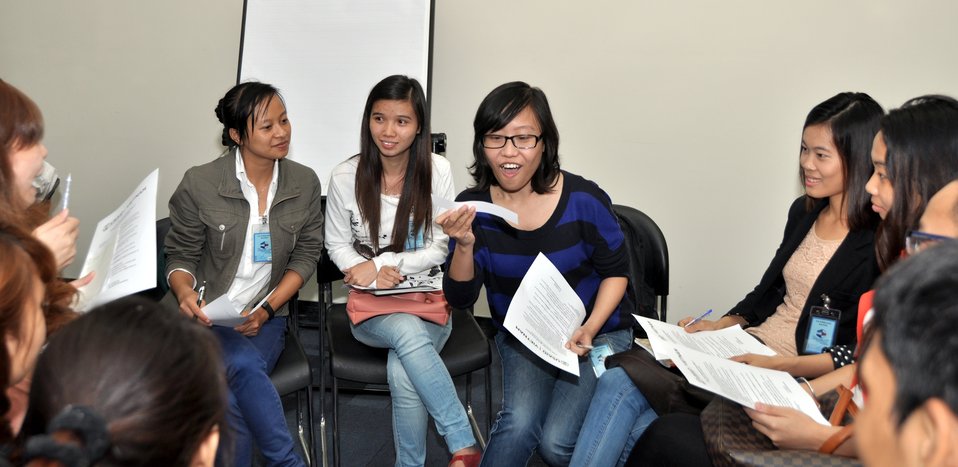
Students join the ‘USAID and Higher Education in Vietnam’ talk

Photo: @USAIDVietnam, November 19, 2012